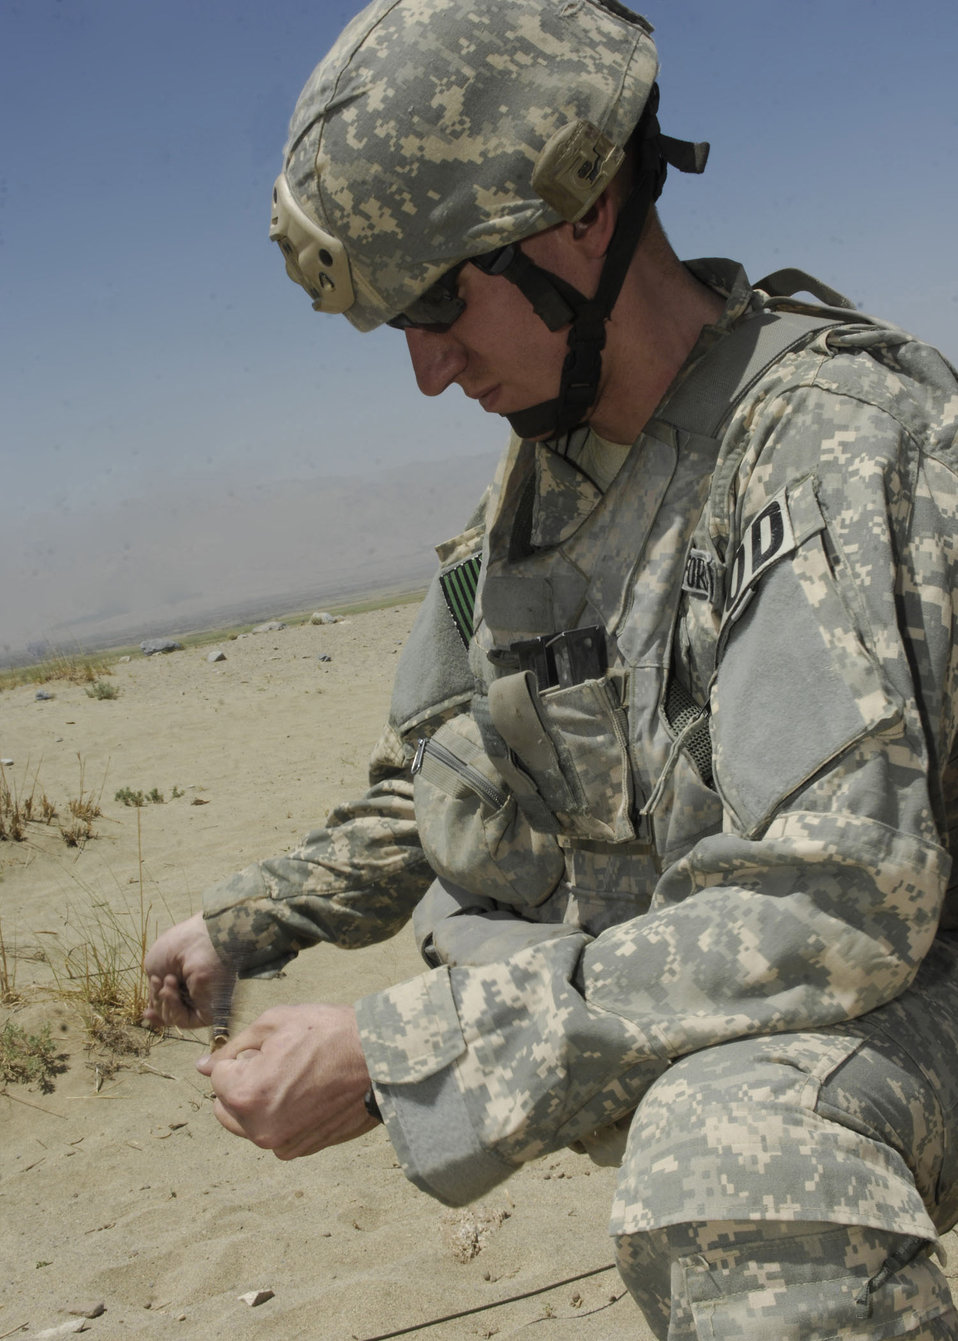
Bagram Airmen destroy explosives, munitions

Staff Sgt. Greg Talley prepares to hook up electronic blasting caps to a control box that he will use to destroy a cache of weapons, including discarded Soviet munitions from the 1970s, Aug. 2 at an ordnance disposal site near Bagram Airfield, Afghanistan. Sergeant Talley is an explosive ordnance disposal technician with the 755th Air Expeditionary Group, and deployed from Dyess Air Force Base, Texas.